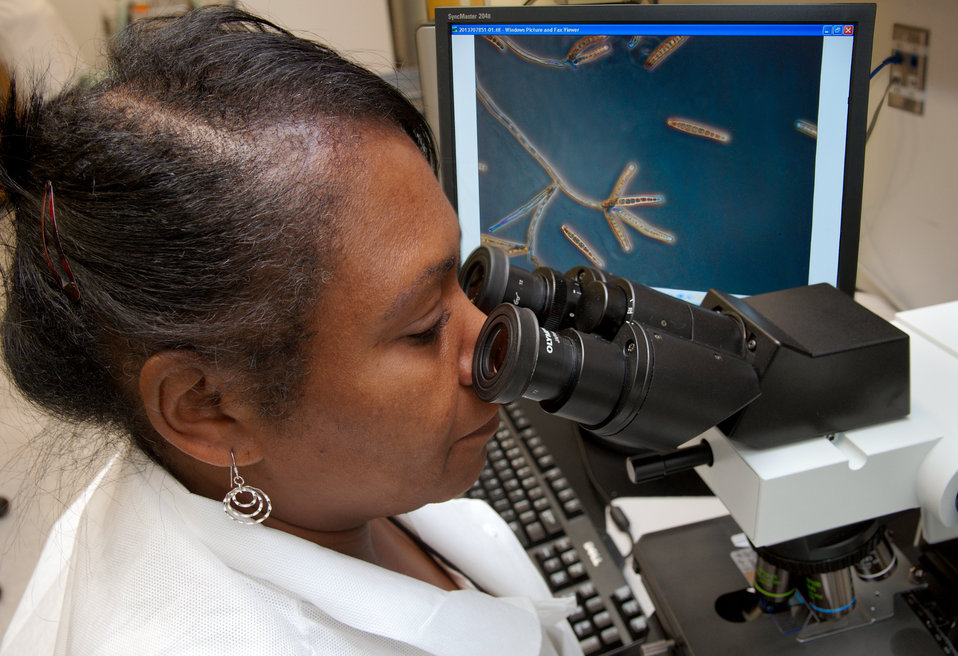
This image shows Centers for Disease Control and Prevention (CDC) scientist Carol Bolden examining microscopic slides showing Exserohilum rostratum (see on computer screen) during the 2012 multistate fungal meningitis outbreak investigation.